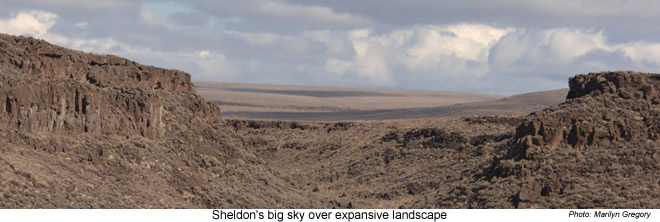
Expansive landscape - Sheldon NWR

The landscape at Sheldon NWR is vast, rugged, and punctuated with waterfalls, narrow gorges, and lush springs among rolling hills and expansive tablelands of sagebrush and mountain mahogany.